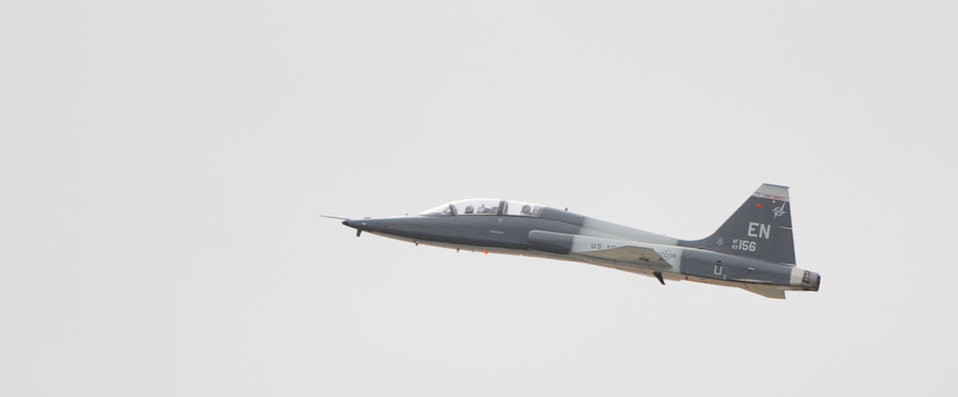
Exercise Mountain Roundup

An AT-38C Talon from the 88th Fighter Training Squadron at Sheppard Air Force Base, Texas, takes off for a training mission Oct. 21, 2009, during the Mountain Roundup exercise at Mountain Home AFB, Idaho. Mountain Roundup is a large-force exercise running from Oct. 15 through Oct. 30 and includes participants from the German air force, U.S. Air Force, U.S. Navy and U.S. Marines.